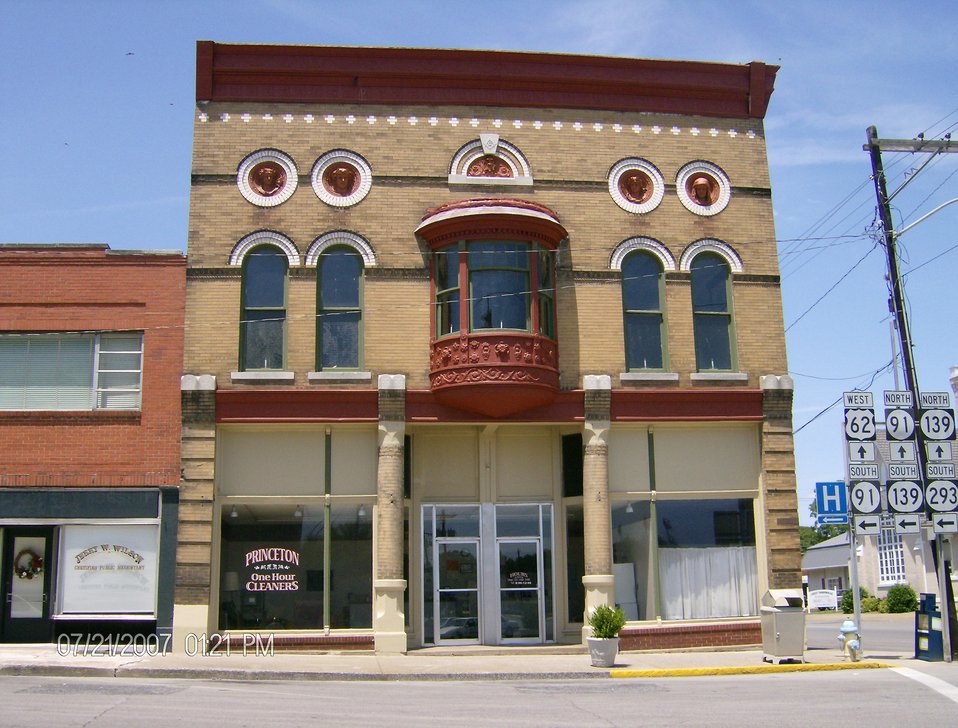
115 West Court Square in Princeton, KY. The building, now owned by Princeton One Hour Cleaners, is part of the historic commercial district of downtown Princeton. The building, built in 1899, was the former location of Princeton's Masonic lodge.